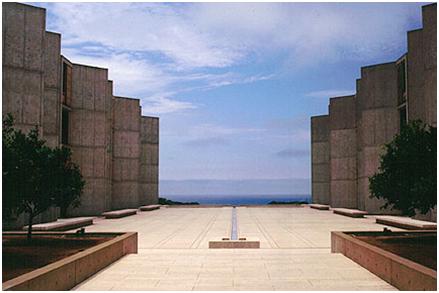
Principal Deputy Assistant Secretary Pyatt Travels to Dhaka

Principal Deputy Assistant Secretary for the Bureau of South and Central Asian Affairs Geoffrey Pyatt travels to Dhaka, Bangladesh, February 11-13, 2011.